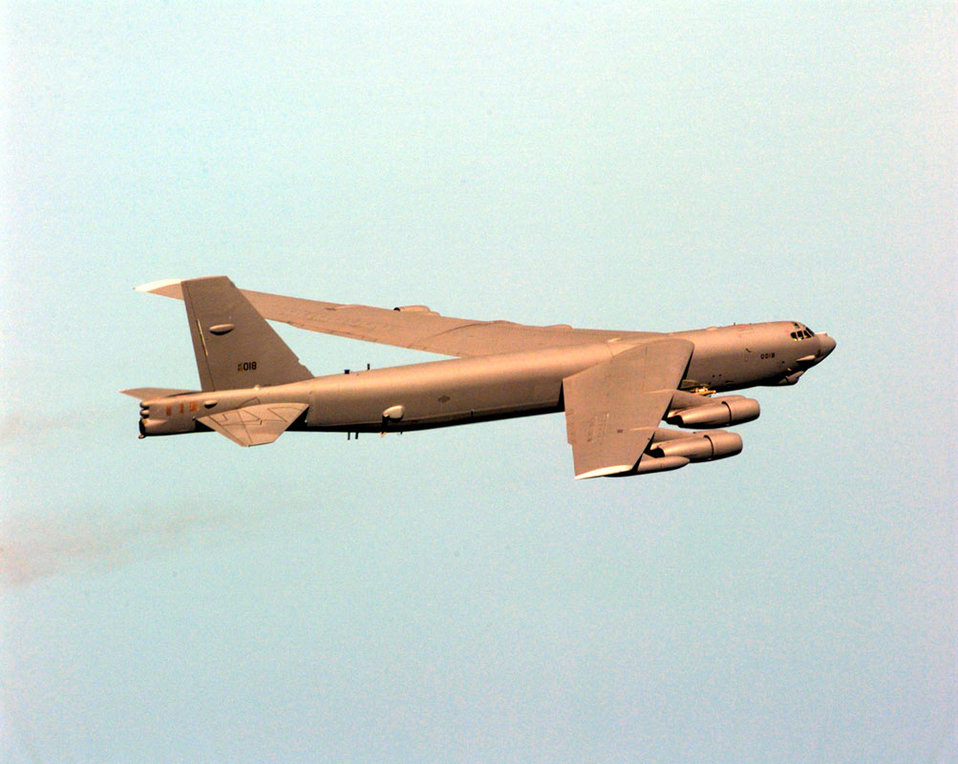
B-52H Stratofortress

FILE PHOTO -- A B-52H Stratofortress of the 2nd Air Expeditionary Group, Royal Air Force Fairford, England, heads toward a target in Kosovo during a NATO Operation Allied Force Combat Penetration mission. The 2nd AEG is made up of B-52H aircraft and crews from the 2nd and 5th Bomb Wings. The 2nd BW is home- based at Barksdale Air Force Base, La., while the 5th BW is based at Minot AFB, N.D.